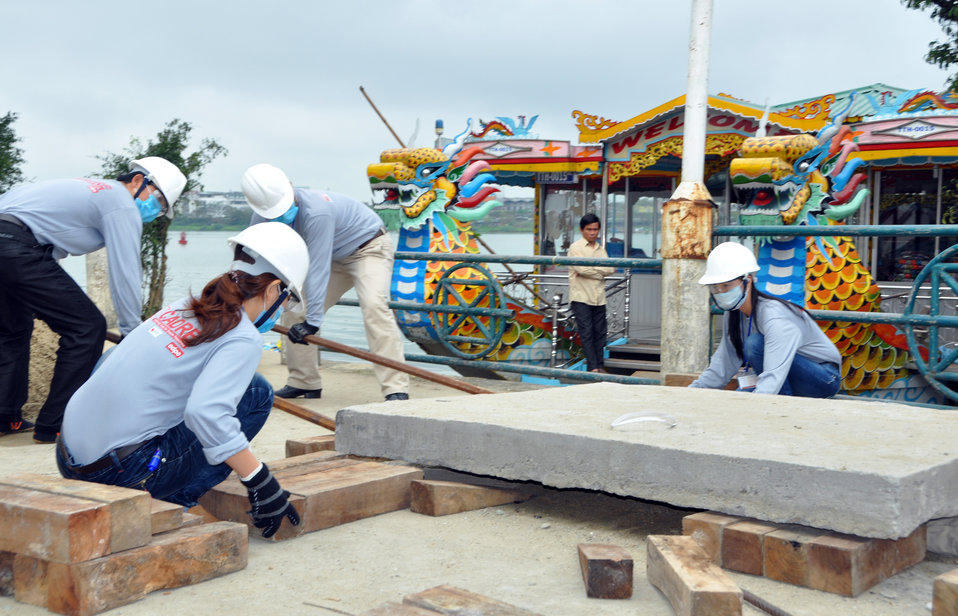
Disaster and Emergency Training Funded by USAID in Hue, Vietnam